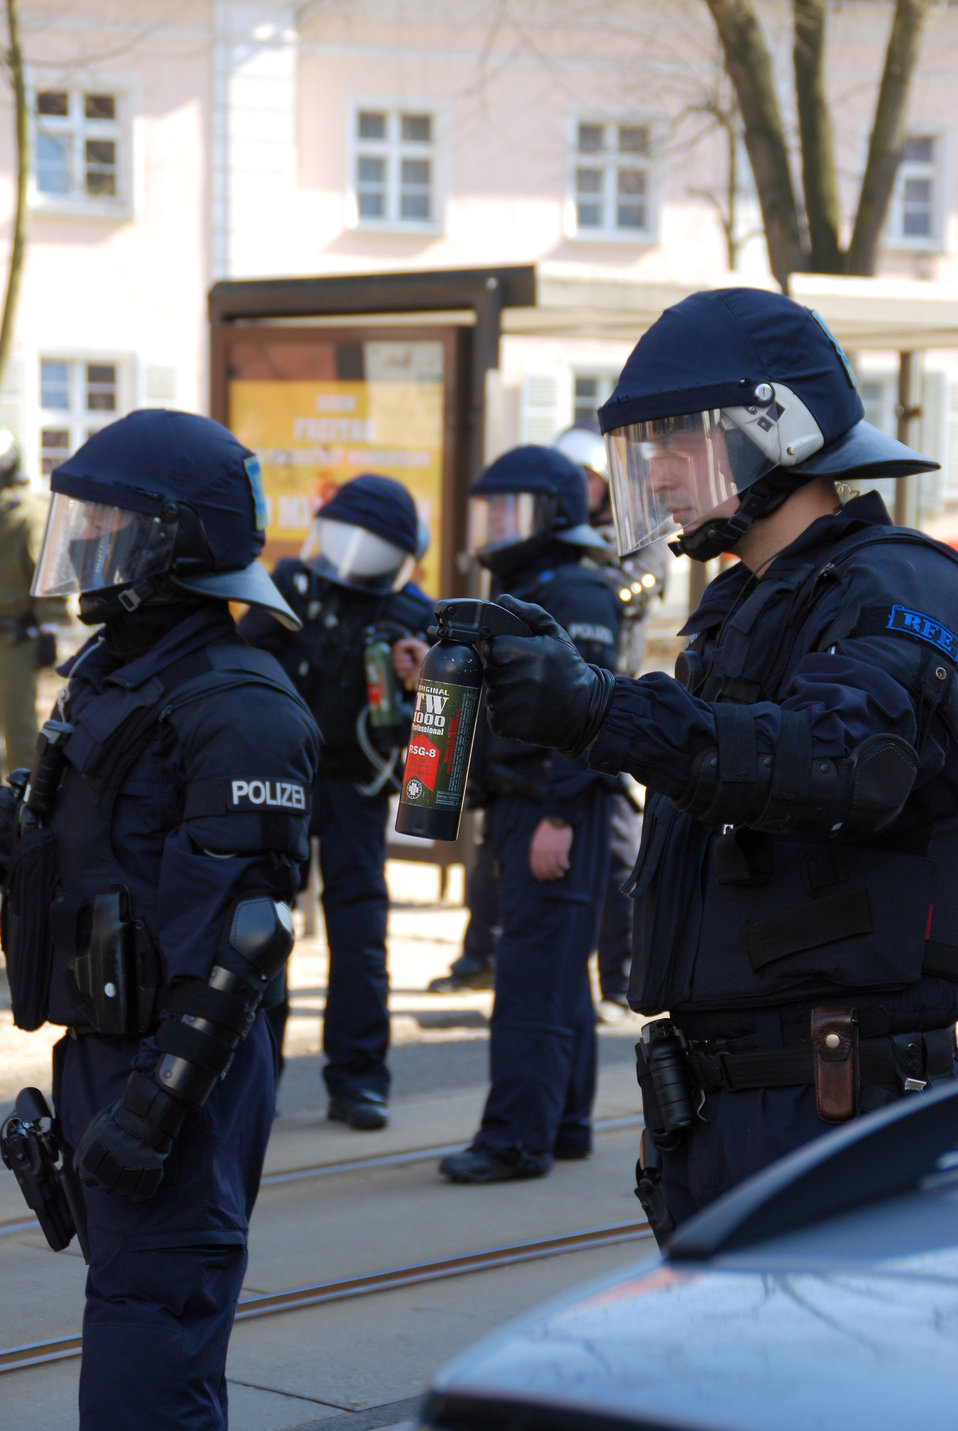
Proteste gegen den Nazi-Aufmarsch am 24.3.2012 in Frankfurt (Oder)